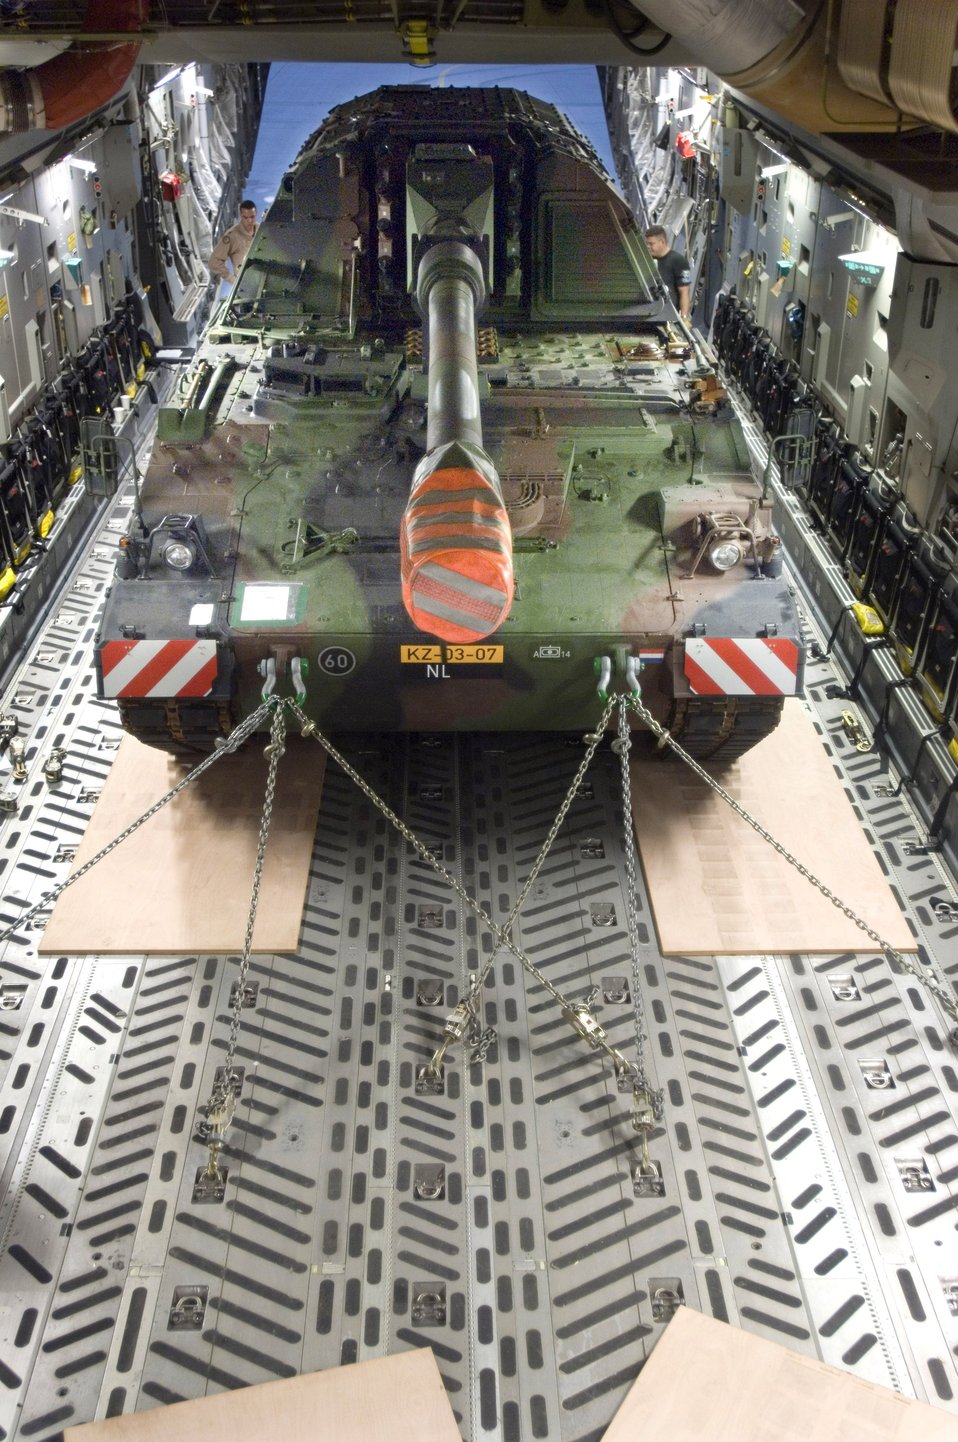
Howitzer takes flight

A Netherlander Howitzer 2000 is fastened to the floor of a C-17 Globemaster III at Ramstein Air Base, Germany, Sept. 6. The 60-ton tank will be flown to Afghanistan on board a C-17 from Charleston Air Force Base, S.C.